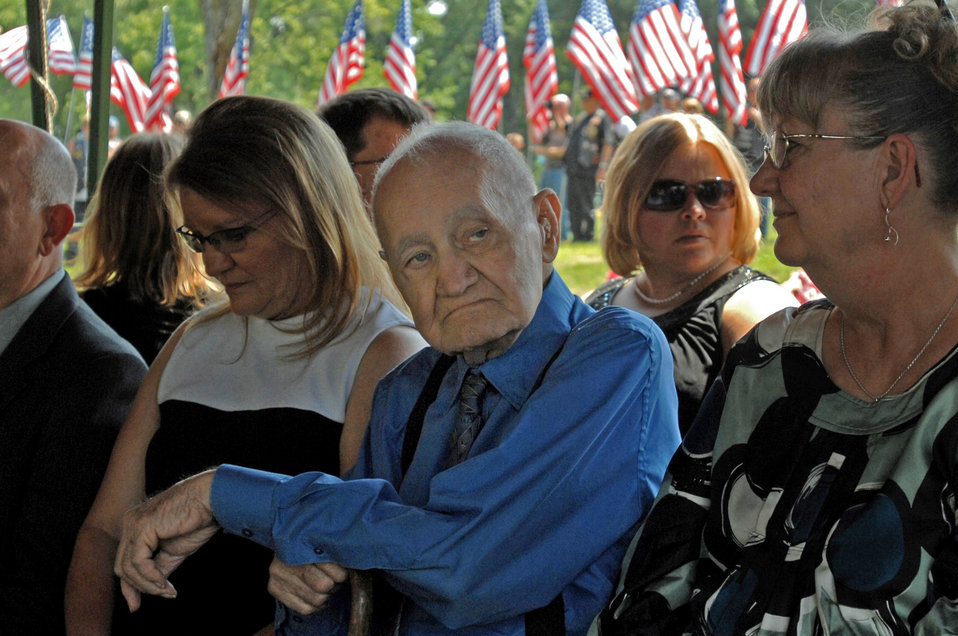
War hero brought home, laid to rest after 30 years MIA

Kenneth Adam, father of Chief Master Sgt. Quincy Adam, waits for the burial portion of his son's funeral service to begin July 27 at Chapel Hill Memorial Cemetery in Kansas City, Kan. Chief Adam is a Vietnam War veteran who was missing in action for more than 40 years. Chief Adam's remains were discovered in Southeast Asia, and he was finally brought home to be laid to rest, giving his family closure in their lives.